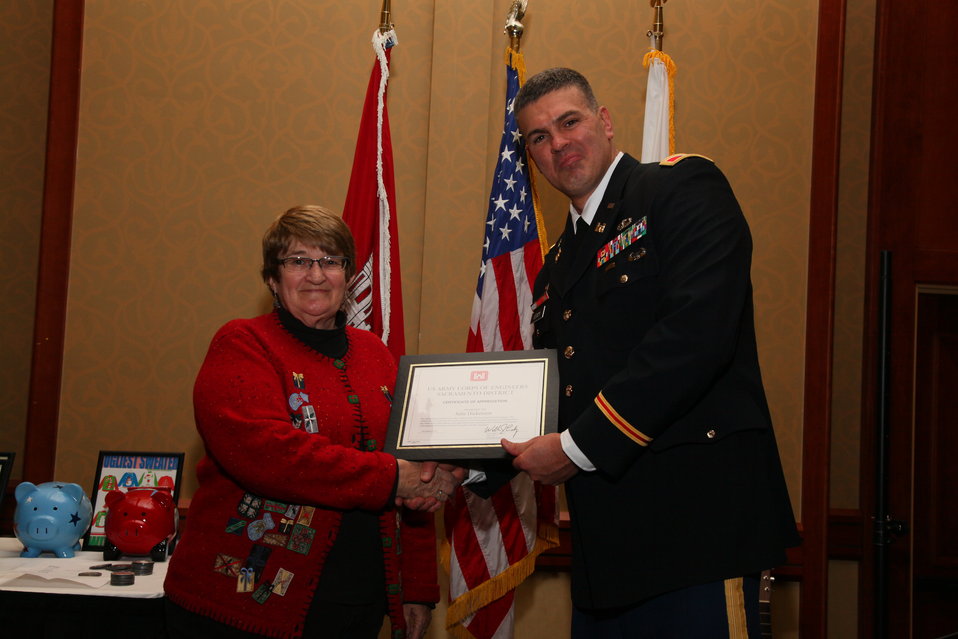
Sacramento District Holiday Party 2011